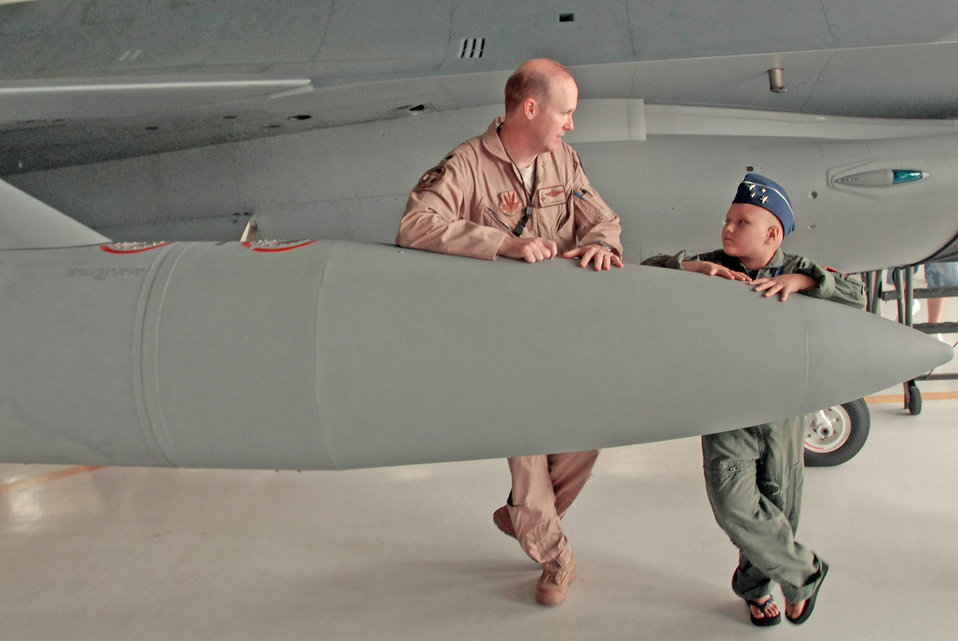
Pilot for a day leaves Andrews with memories for a lifetime

Lt. Col. Chris Hardgrave talks with Kayla Kiley alongside an F-16 Fighting Falcon during the Pilot for a Day Program July 23 at Andrews Air Force Base, Md. Colonel Hardgrave is an F-16 pilot with the 121st Fighter Squadron.